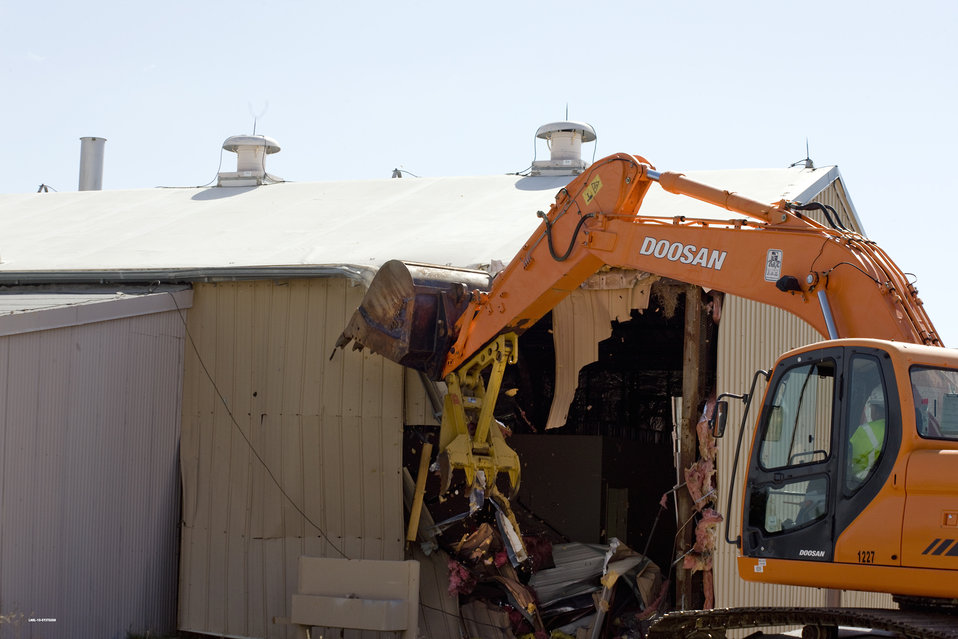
Fusion Researchers Gather to Say Goodbye to Pioneering Facility

The Tritium Systems Test Assembly facility is among more than 20 buildings that will be demolished at Los Alamos National Laboratory with Recovery Act funding.